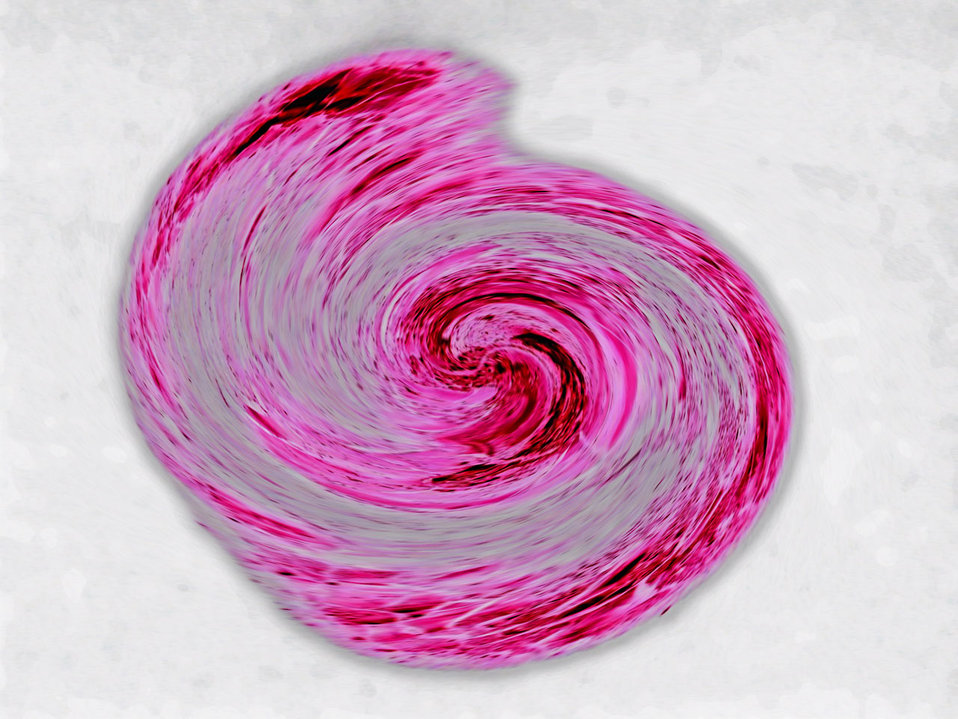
Solarised globe

Manipulated image.